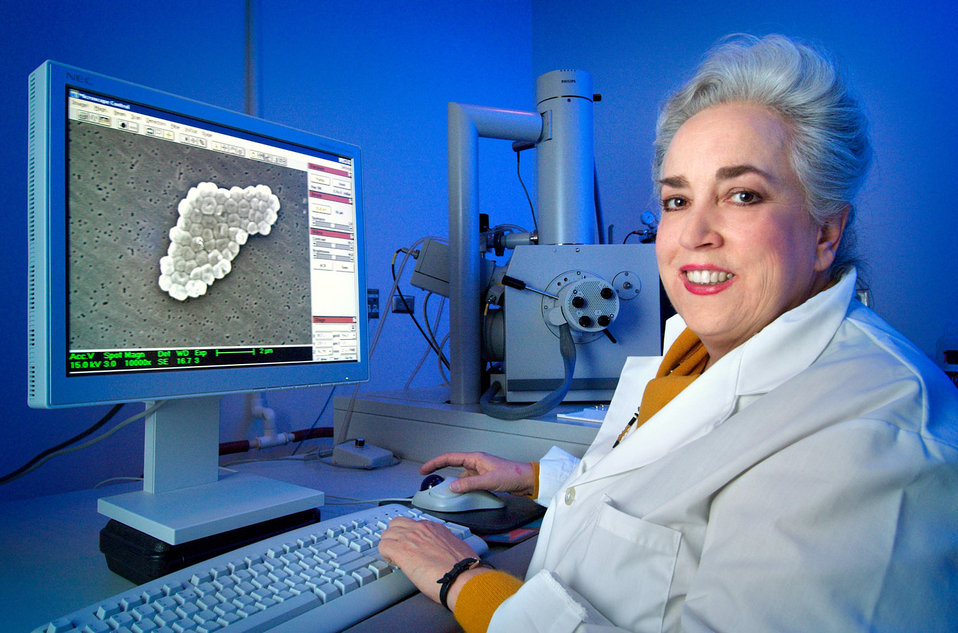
Janice Carr, a CDC microbiologist and electron microscopist, is scanning a specimen of Acinetobacter baumannii bacteria.